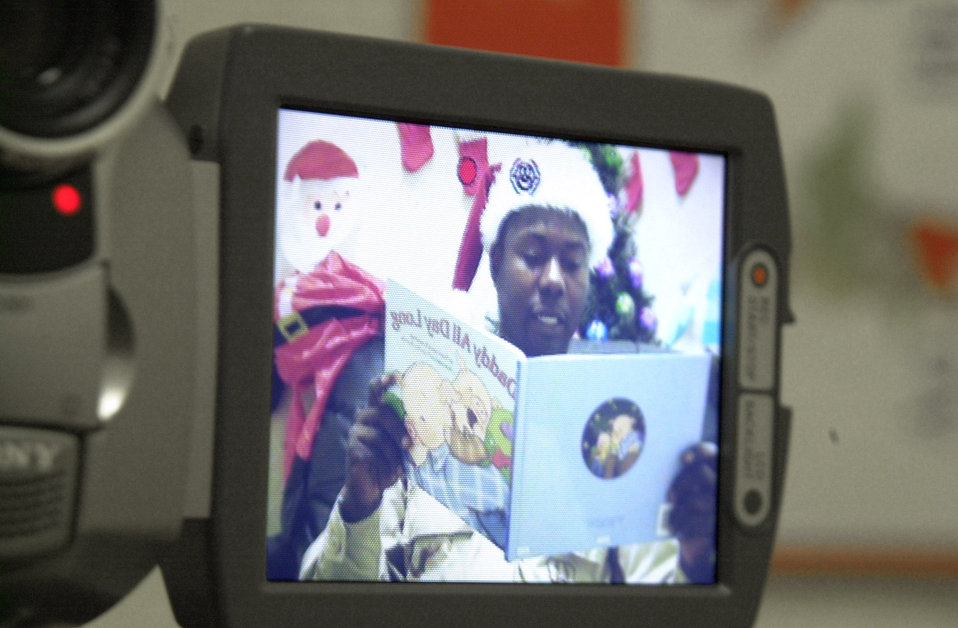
Story time

SOUTHWEST ASIA (AFPN) -- Tech. Sgt. Anthony Reeves reads a story to his child to be sent back home. Sergeant Reeves is deployed from the 43rd Airlift Wing at Pope AFB, N.C.